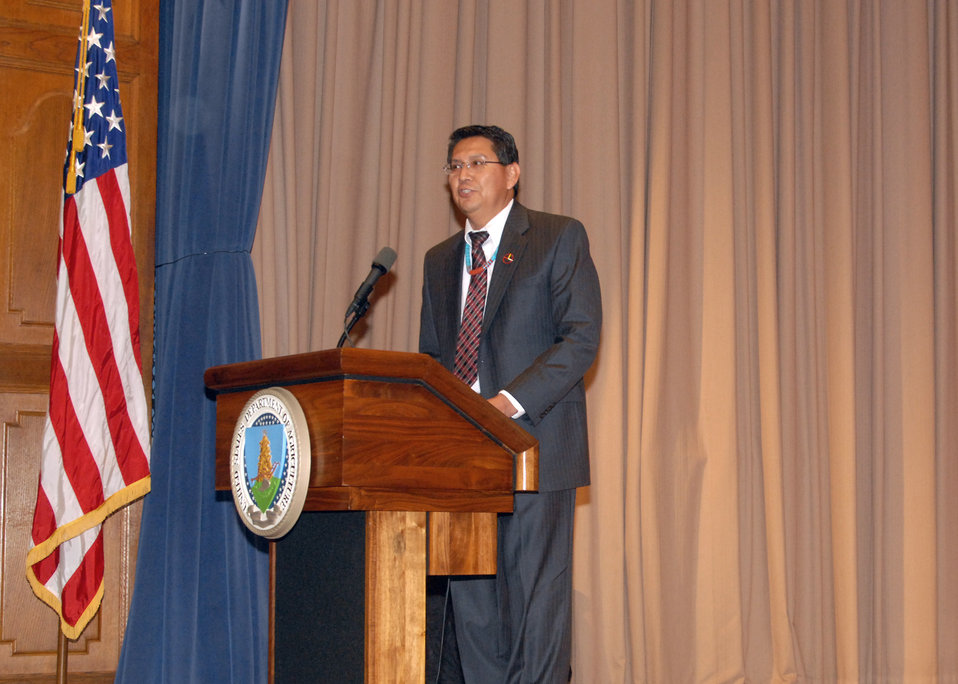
U.S. Department of Agriculture (USDA) Natural Resource Conservation Service (NRCS) Conservation Engineering Division Director Noller Herbert is the master of ceremonies at USDA’s Native American Heritage Month Observance in the Jefferson Auditorium at the USDA South Building in Washington, D.C. on Tuesday, Nov. 20, 2012. The theme for this year’s observance is “Serving with Honor, Pride, and Devotion: Country, Land and People”.